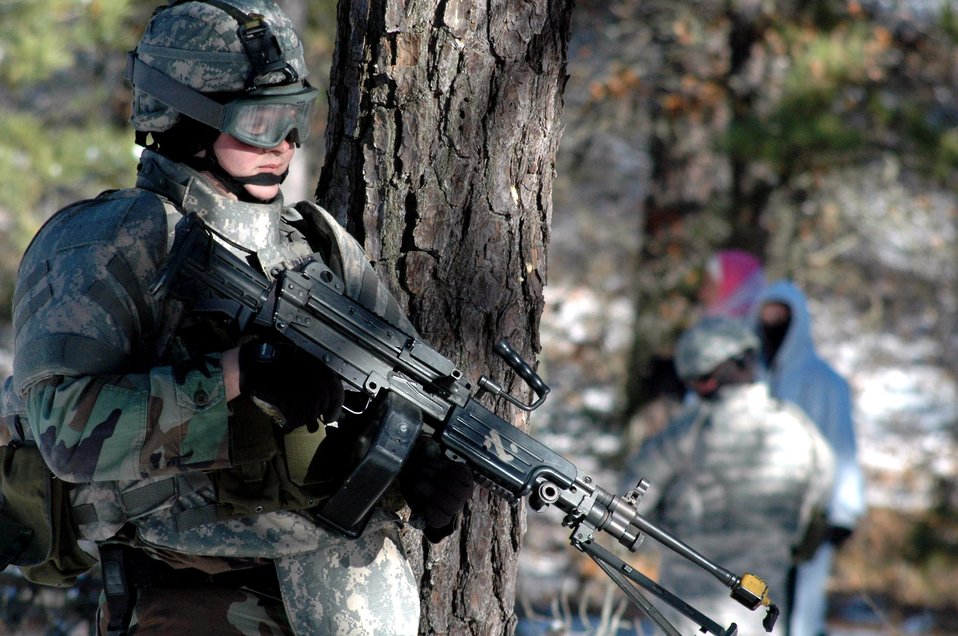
Air Force tactical security element training

Students in the tactical security element training course practice a dismounted patrol during training on a range on Fort Dix, N.J. The course, held in early December, was the first of its kind by the U.S. Air Force Expeditionary Center at Fort Dix. Taught by instructors from the Air Force Office of Special Investigations and a security forces cadre from the center's 421st Combat Training Squadron, the training is designed to prepare security forces for